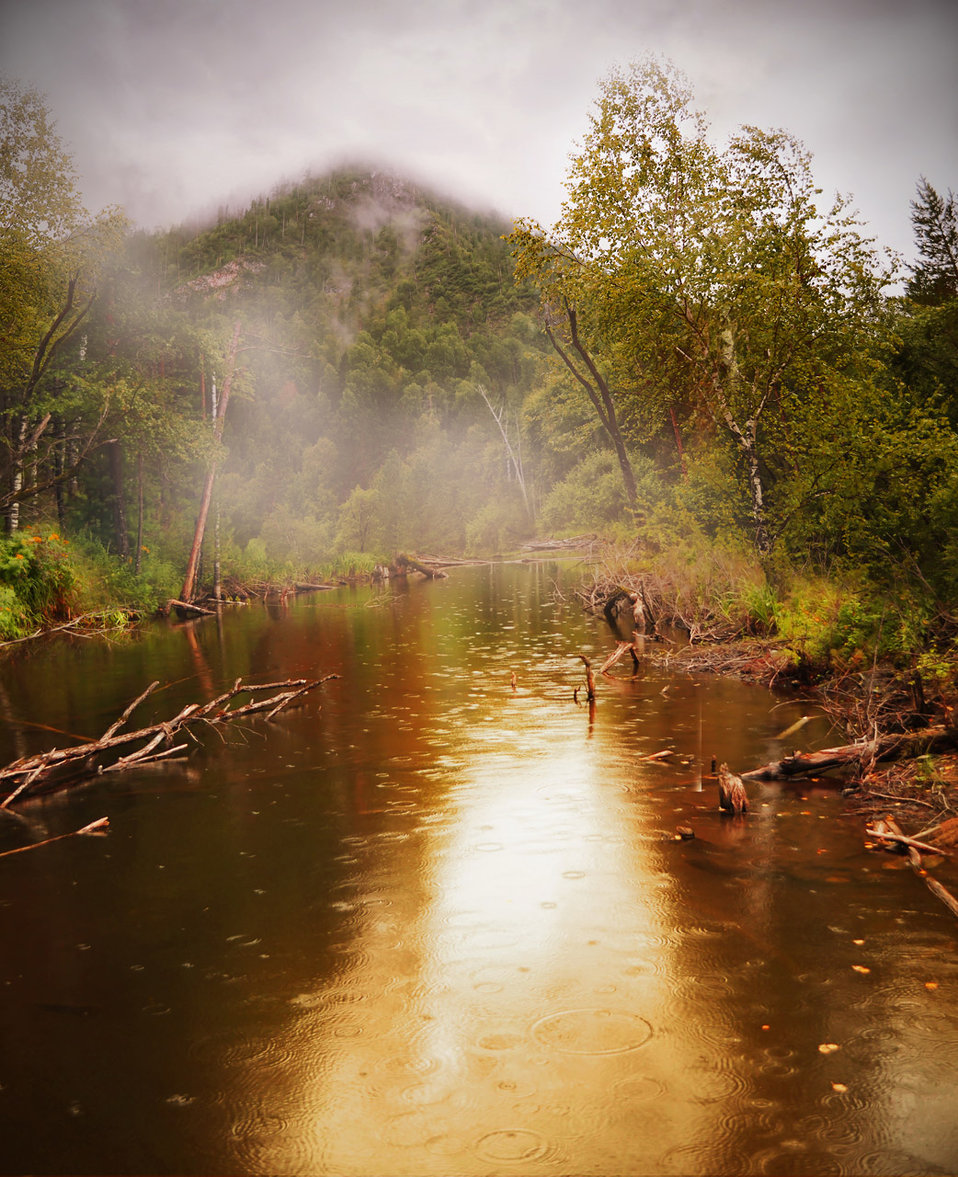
Rain in the forest.

In the forest it began to rain. raindrops leave circles on the water. rising mist..